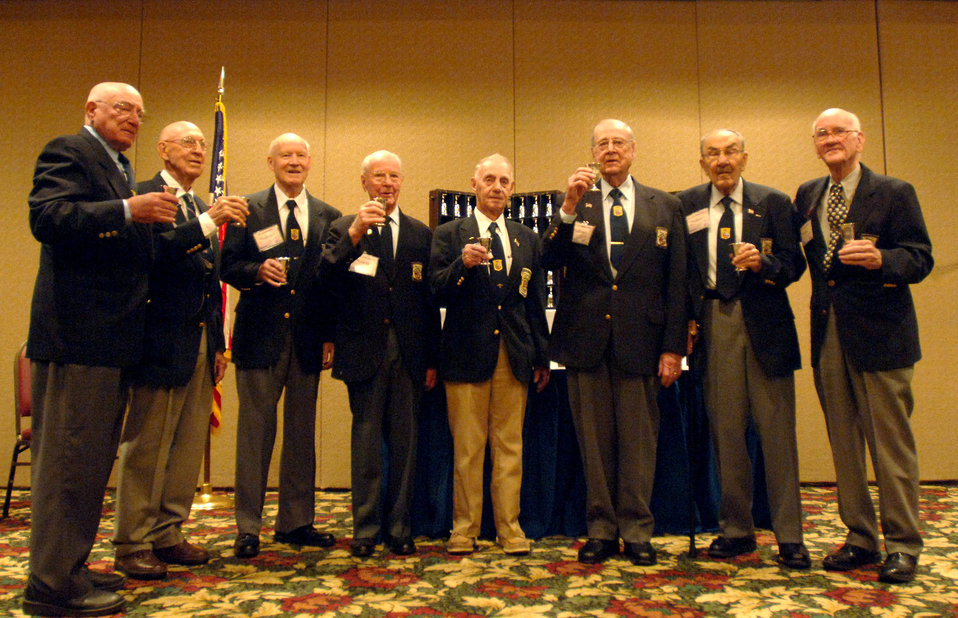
Doolittle Raiders celebrate 64th reunion

Eight of the surviving 16 Doolittle Raiders raise their goblets for their fallen brothers during their 64th reunion in Dayton, Ohio, on April 18, 2006. Visit our Doolittle Web Exclusive page for more information.